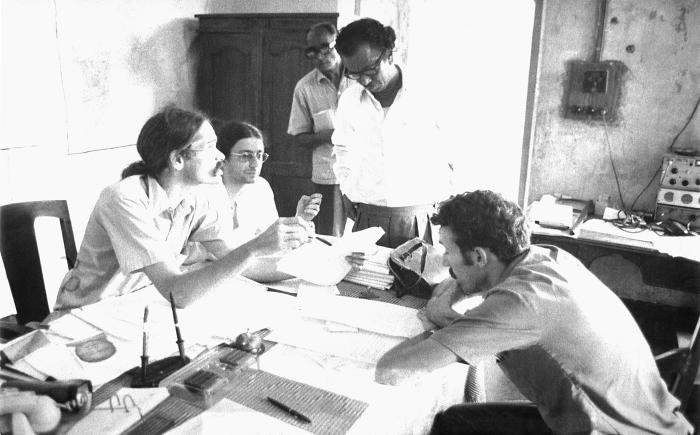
This 1975 gathering, which was photographed in the Bangladesh district of Sylhet, depicted a number of eradication campaign officials who were meeting to discuss strategies, and update one another as to progress being made in what would prove to be one mankind's greatest achievements in the realm of public health, the worldwide eradication of smallpox.